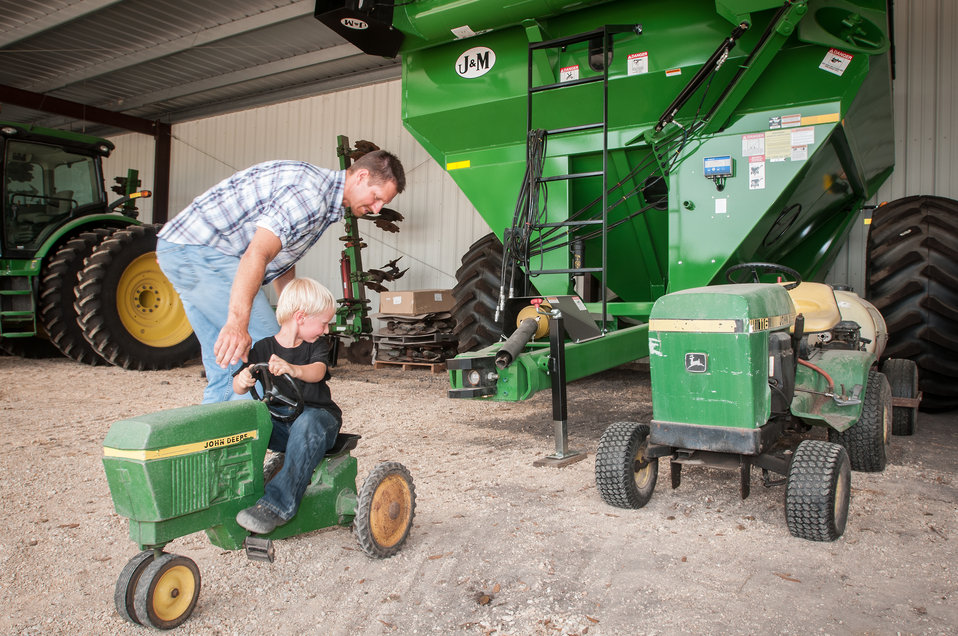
Michael Popp (pronounced Pope) helps his son Hayden (2) practice backing up to some farm equipment at Popp Farms 05 in El Campo, TX on Jun. 20, 2013. Their 2,400 acres of farmland currently grows cotton and milo (grain sorghum) and are part of the United Agricultural Cooperative, Incorporated.